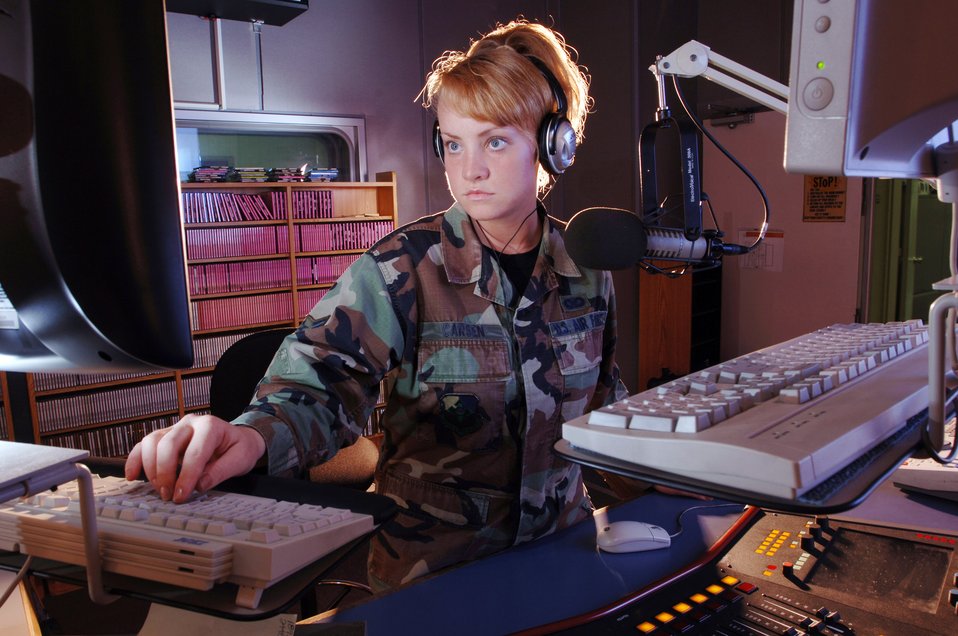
Live from Japan

YOKOTA AIR BASE, Japan -- Airman 1st Class Julieanna Carsen hosts the daily radio show